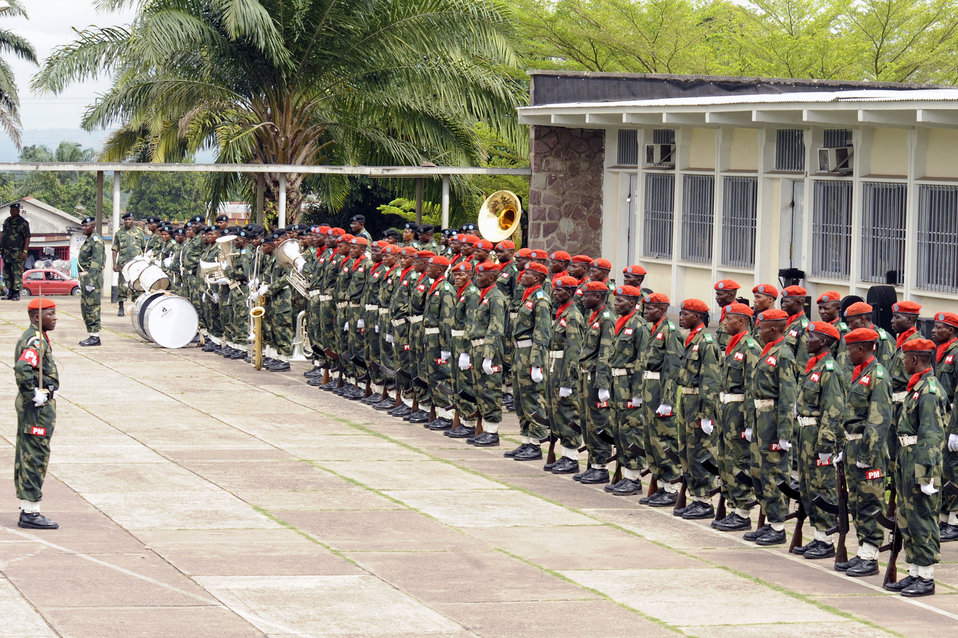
MEDLITE 11

Members of the Democratic Republic of the Congo's military police force line up to prepare for a distinguished visitor entrance during the opening ceremonies for the MEDLITE 11 exercise April 25, 2011, in Kinshasa, Democratic Republic of the Congo. MEDLITE 11 is a joint medical exercise focused on aeromedical evacuation, to improve the readiness of U.S. Air Force and DRC personnel.